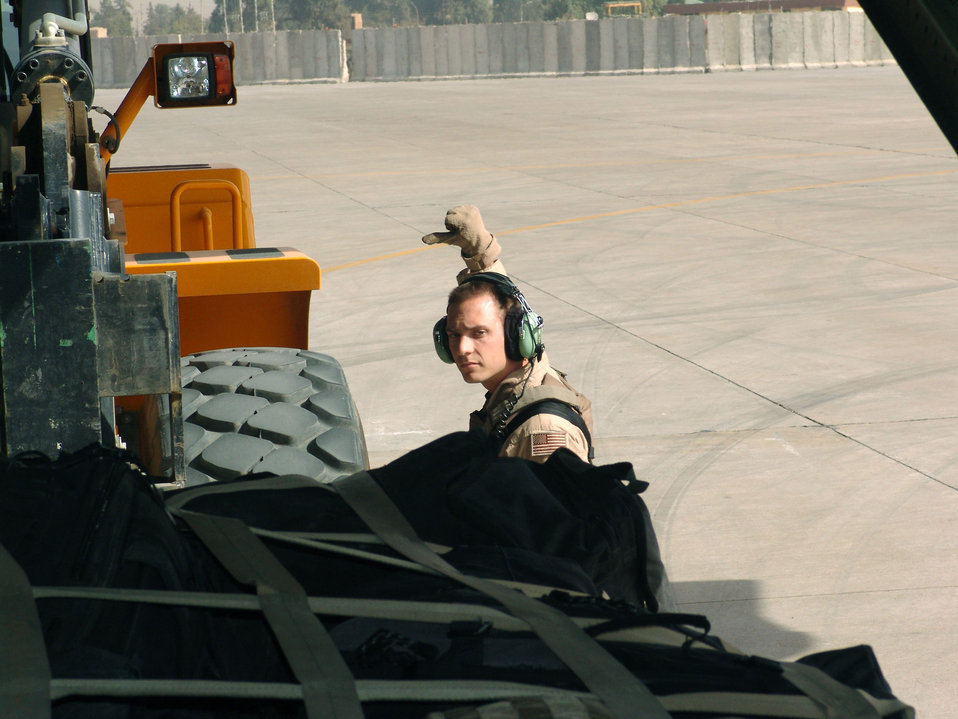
Into Iraq

IRAQ -- Tech. Sgt. Scott Jones guides a forklift as it loads a pallet aboard a C-130 Hercules in Iraq on Oct. 25. He is a loadmaster assigned to the 386th Expeditionary Airlift Squadron at a forward-deployed location. Sergeant Jones is deployed supporting Operation Iraqi Freedom from the 440th Airlift Wing at the General Mitchell Air Reserve Station, Wis.